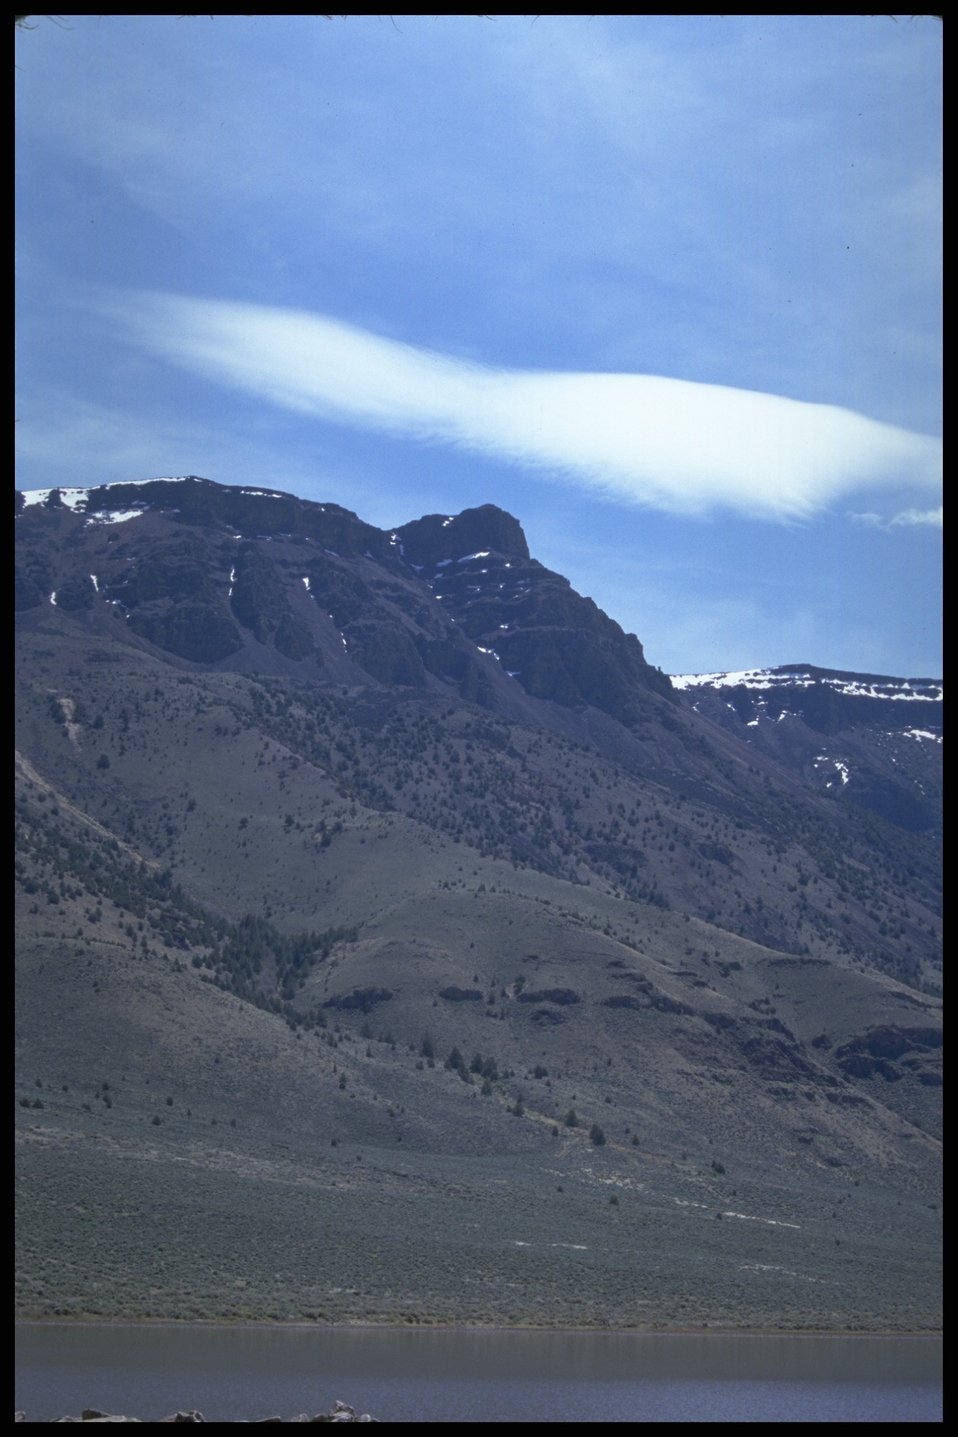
Hart Mountain, Lakeview District.